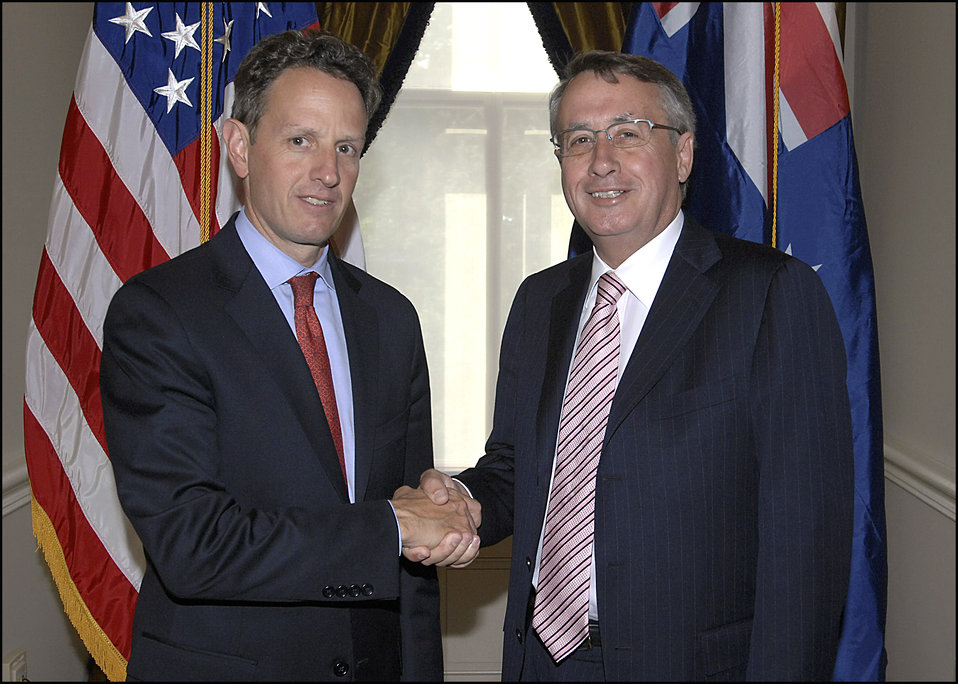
Australian Treasurer Wayne Swan

On September 23, 2009, Secretary Geithner met with the Australian Treasurer Wayne Swan at Treasury.